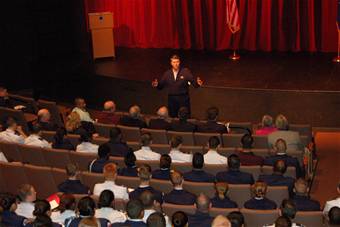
General talks to next greatest generation

Gen. Paul V. Hester addresses a crowd Dec. 6 at an auditorium on the University of Houston campus. The crowd included members for the university's ROTC detachment, Houston-area junior ROTC detachments and university officials. General Hester is the Pacific Air Forces commander and visited Houston to brief the